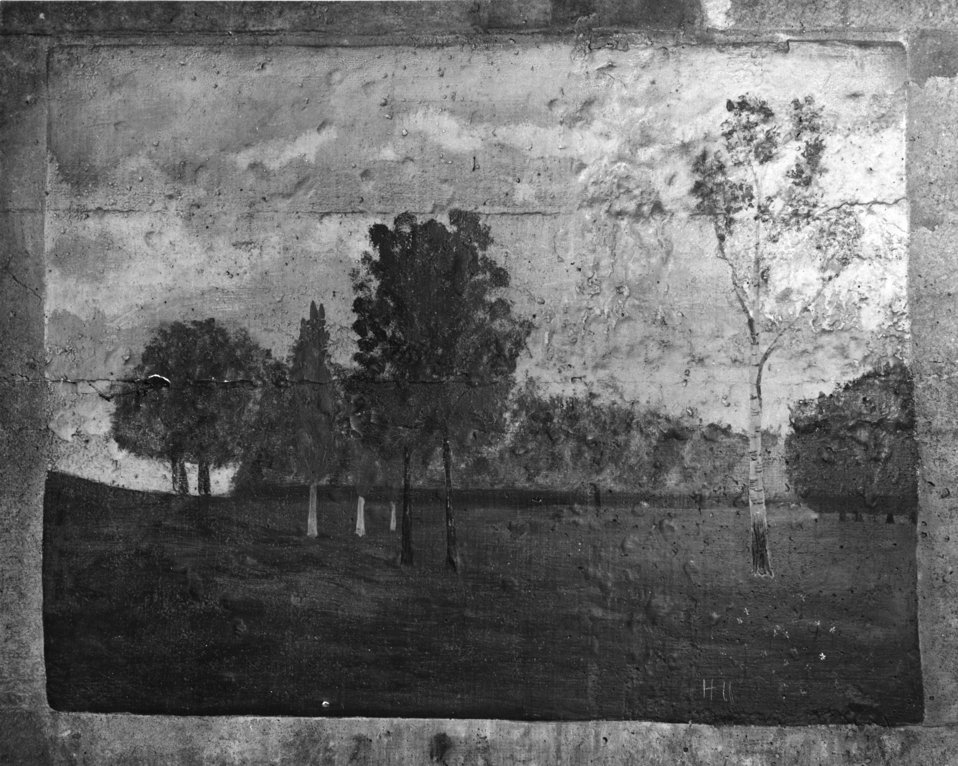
Painting of Wheat School by Edgar Ward 1940 Oak Ridge

MED-293 DOE photo Ed Westcott 1940 Oak Ridge Tennessee